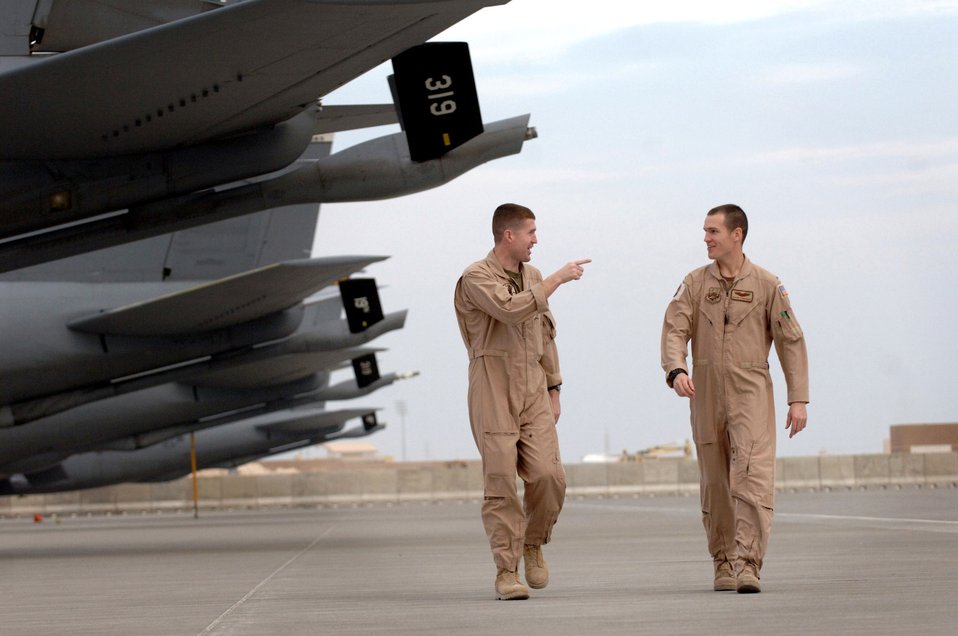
Sibling tanker pilots connect 7,700 miles from home

Marine Capt. Jason Torbensen visits the flightline where his younger brother, Air Force 1st Lt. Dustin Torbensen parks his KC-135 Stratotanker Nov. 28 in Southwest Asia. Captain Torbensen is deployed for one year in Southwest Asia as the 3rd Marine Airlift Wing's liaison officer to the Combined Air Operations Center, and Lieutenant Torbensen is soon to return from a two-month rotation to Southwest Asia. The brothers are from Kaysville, Utah.